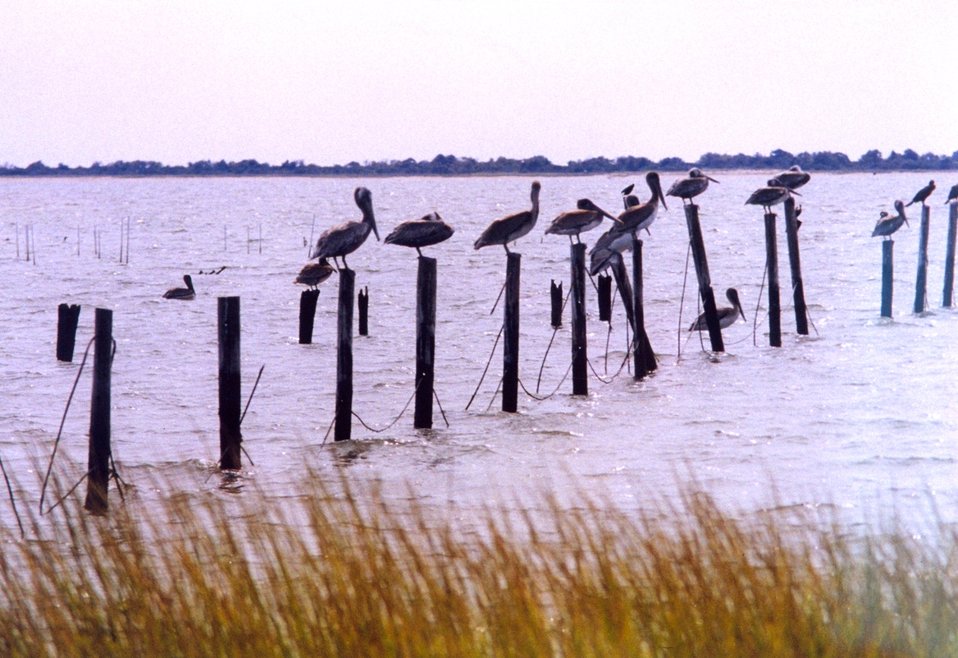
Pelicans on a post.